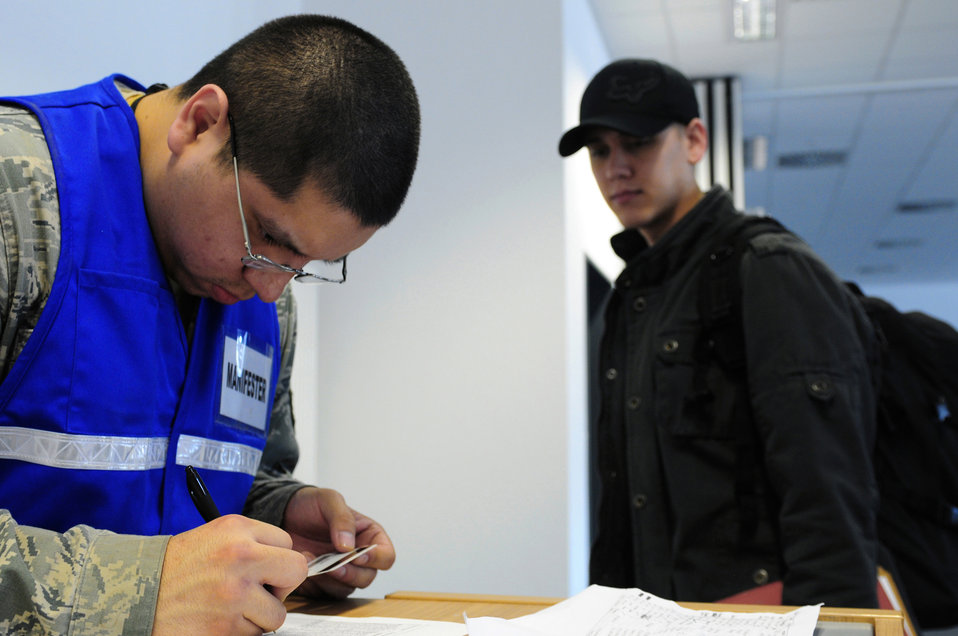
Airmen Support Joint Task Force Odyssey Dawn

U.S. Air Force Senior Airman Maguina Frank, 86th Logistics Readiness Squadron, processes Airman 1st Class Randall Watson, 86th Civil Engineer Squadron, in preparation for a deployment in support of Joint Task Force Odyssey Dawn, Ramstein Air Base, Germany, March 21, 2011. The U.S. Africa Command task force was established to provide operational and tactical command and control of U.S. military forces supporting the international response to the unrest in Libya and enforcement of United Nations Security council Resolution 1973. UNSCR 1873 authorizes all necessary measures to protect civilians in Libya under threat of attack by Qadhafi regime forces. JTF Odyssey Dawn is commanded by U.S. Navy Admiral Samuel J. Locklear, III.